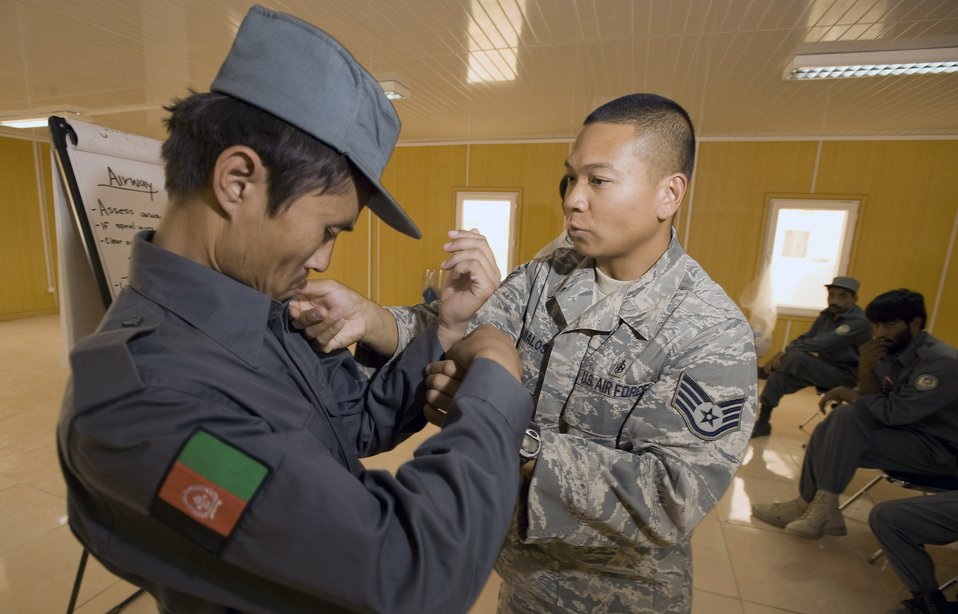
How to save a life

Staff Sgt. Nestor Albanos shows Afghan national police members how to make an impoverished sling during a Combat Life Savers course Aug. 12 at Qalat, Afghanistan. Sergeant Albanos is an Air Force medical technician assigned deployed to the Zabul Provincial Reconstruction Team and teaches the ANP and other Afghan forces lifesaving skills at the PRT compound.